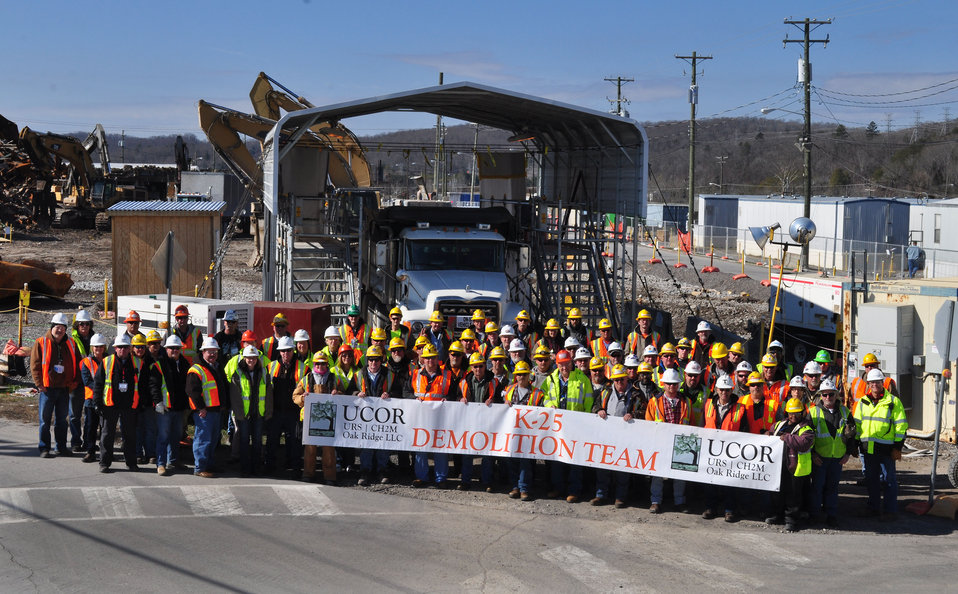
7

K-25 North Tower